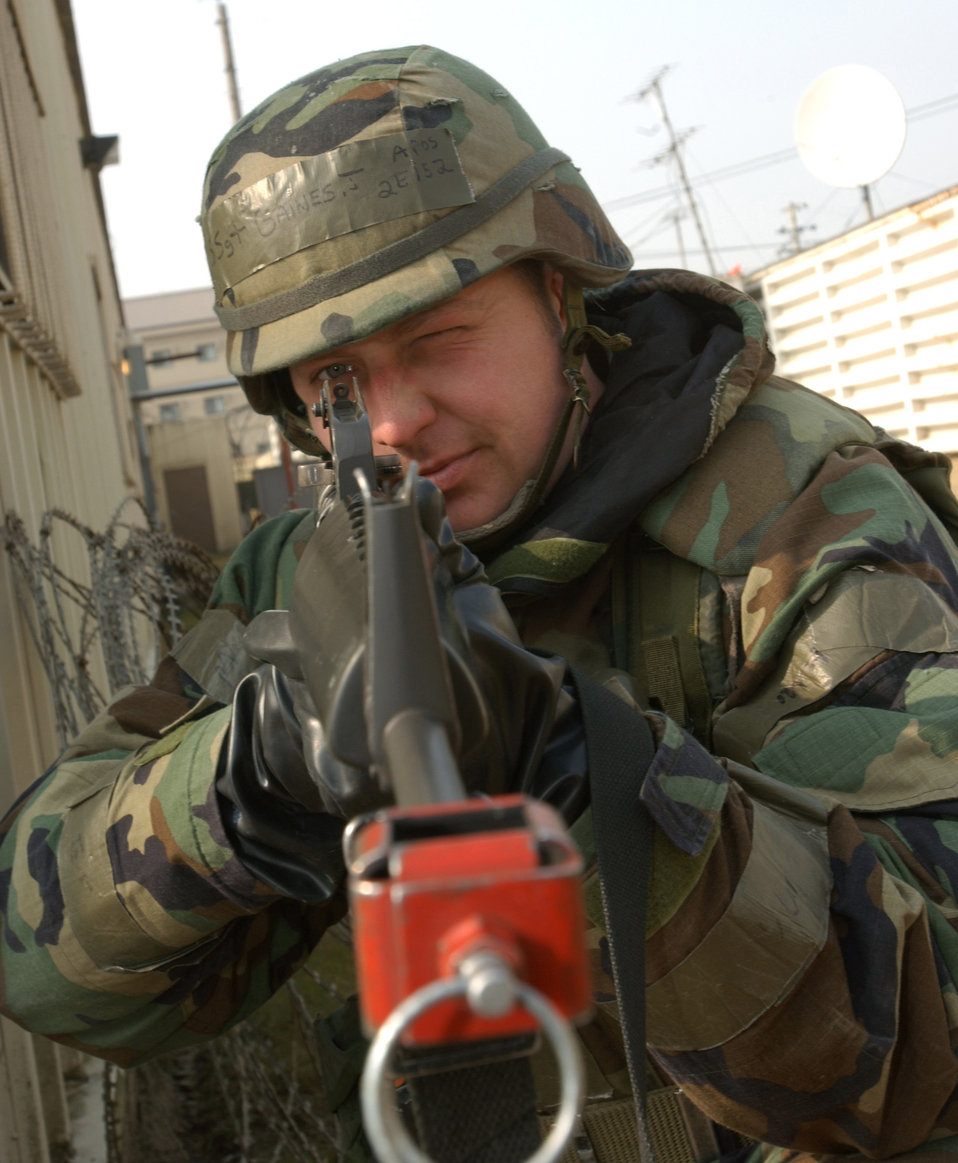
Got my eye on you

KUNSAN AIR BASE, South Korea -- Staff Sgt. Joe Gains performs a sweep of a building during an exercise here Jan. 26. Sergeant Gains is assigned to the 8th Communication Squadron.